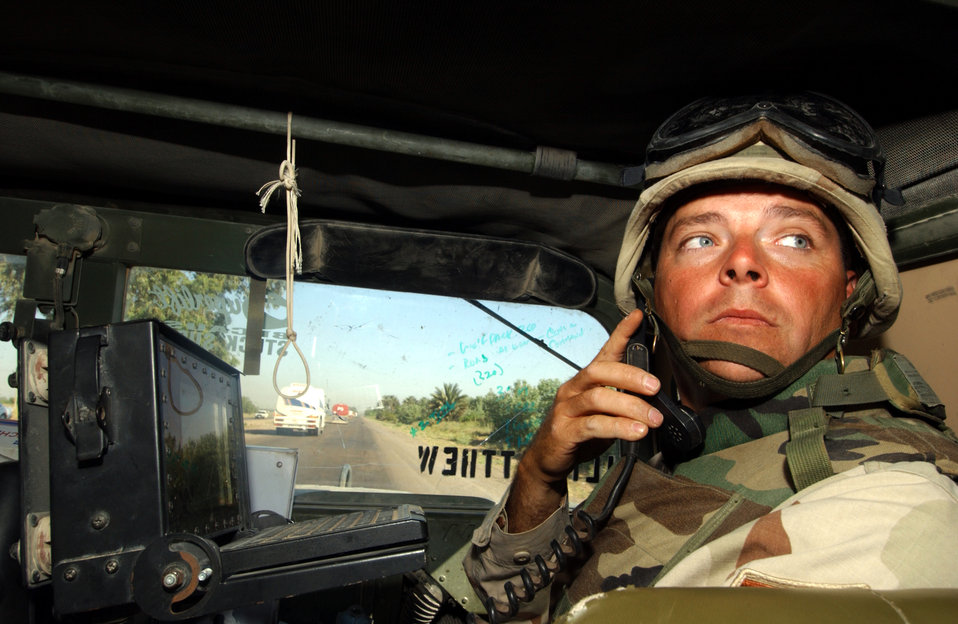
Course trains Airmen to drive for Army in Iraq

IRAQ -- Master Sgt. Theron Jones monitors the progress of a 67-vehicle convoy along the main supply route between Baghdad and Tikrit. He and other Airmen of the 2632nd Air Expeditionary Force Transportation Company provide security to military and civilian convoys as they move supplies to forward-deployed locations throughout Iraq.